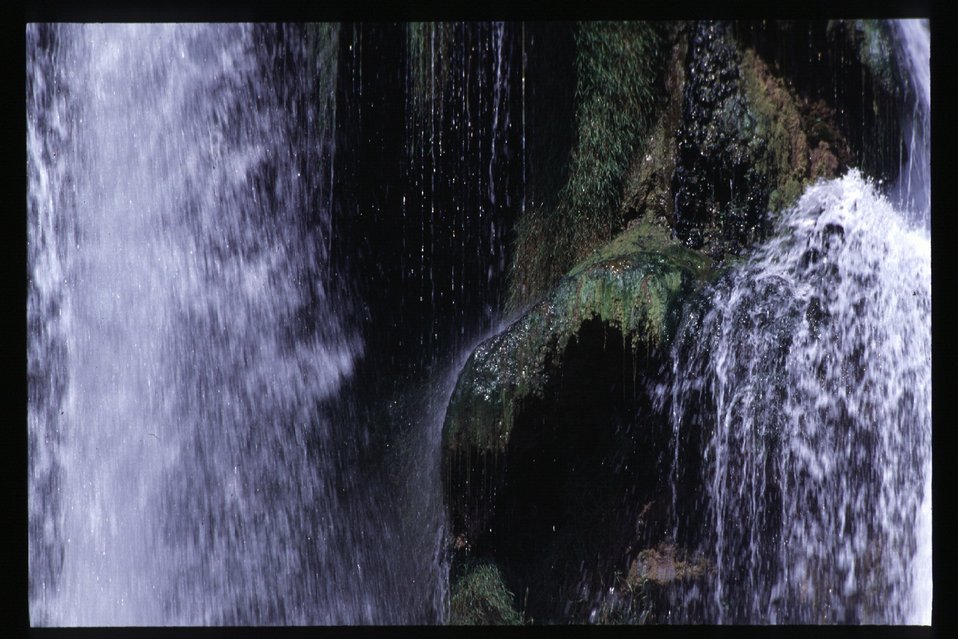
Waterfall South Fork of Snake River Idaho Falls Field Office USRD Upper Snake River District